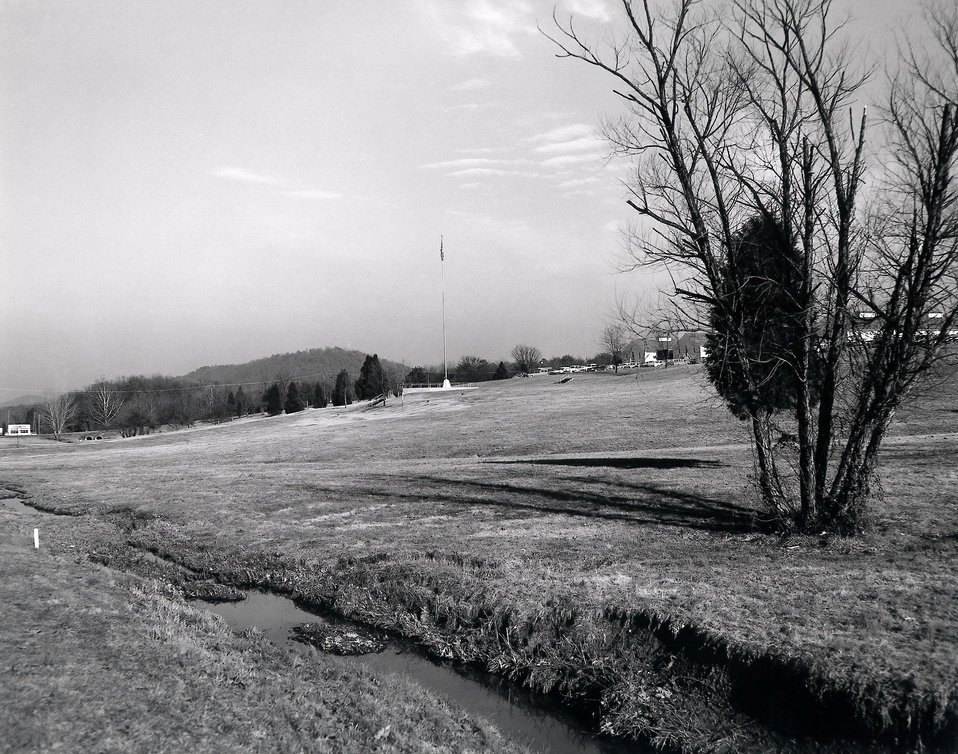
AEC Adm. Proposed Site for New Bldg. Oak Ridge

65-56 DOE photo by Ed Westcott 2-16-1965 Oak Ridge Tennessee